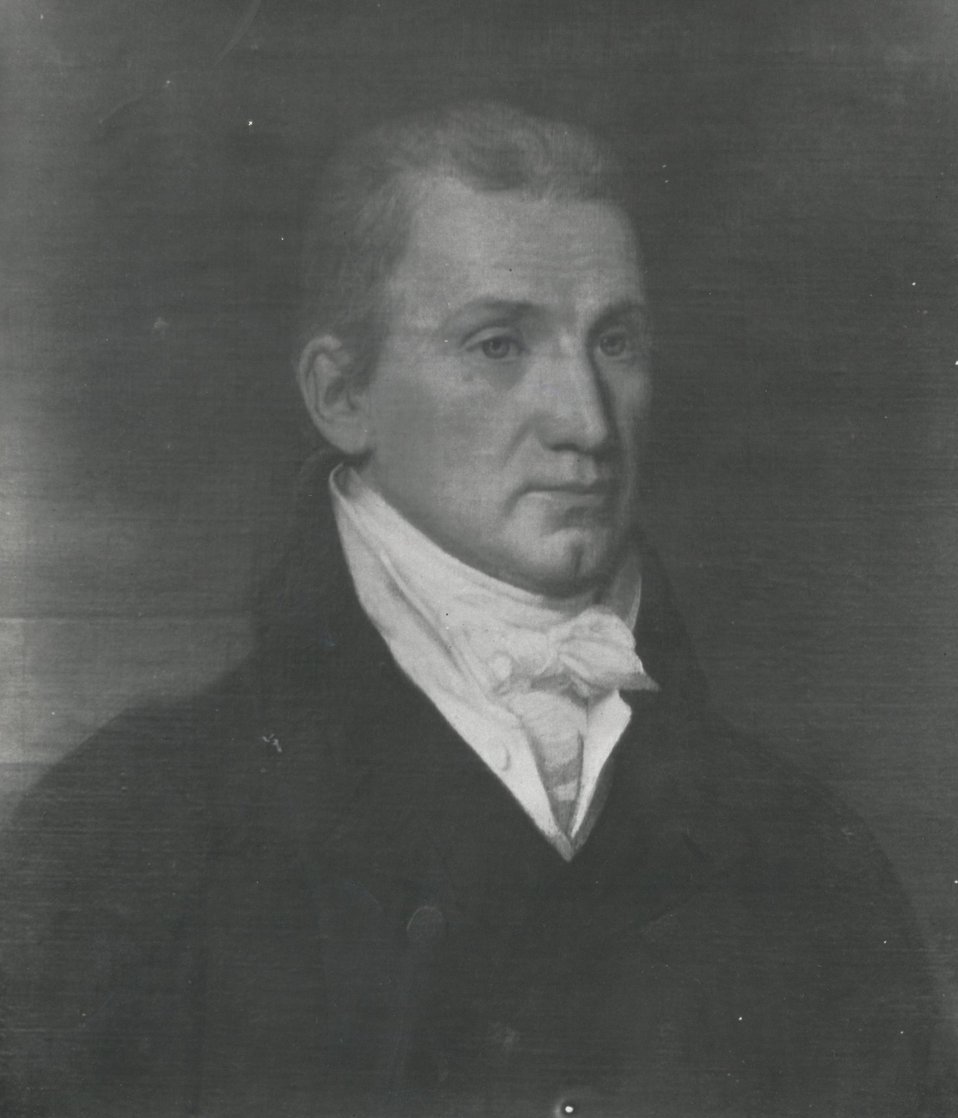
James Monroe, U.S. Secretary of State, April 6, 1811 to March 3, 1817 (ad interim October 1, 1814 to February 28, 1815)